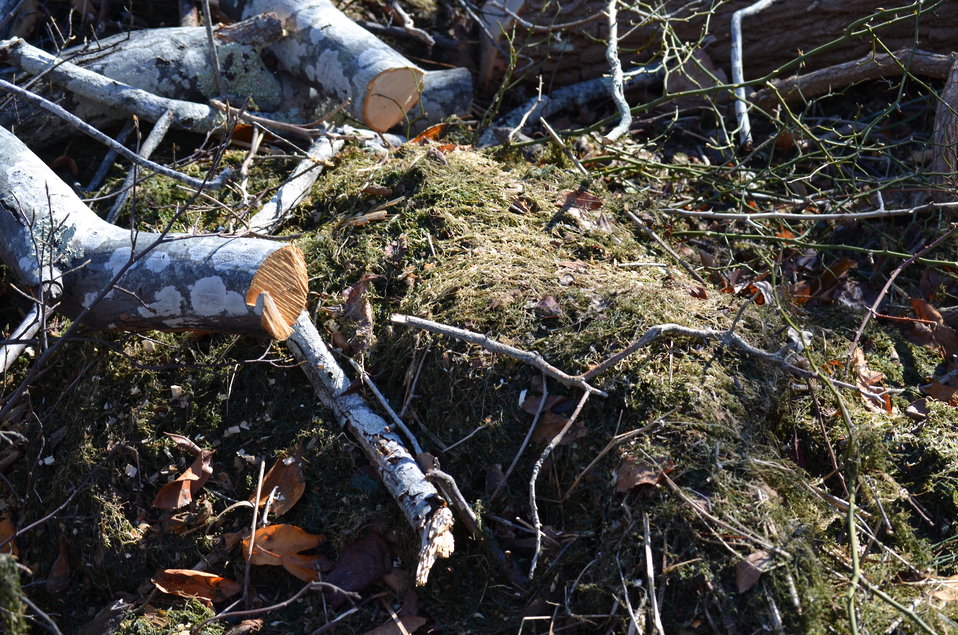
Debris and vegetation (RI)

Debris and vegetation brought ashore by surf at Trustom Pond National Wildlife Refuge.